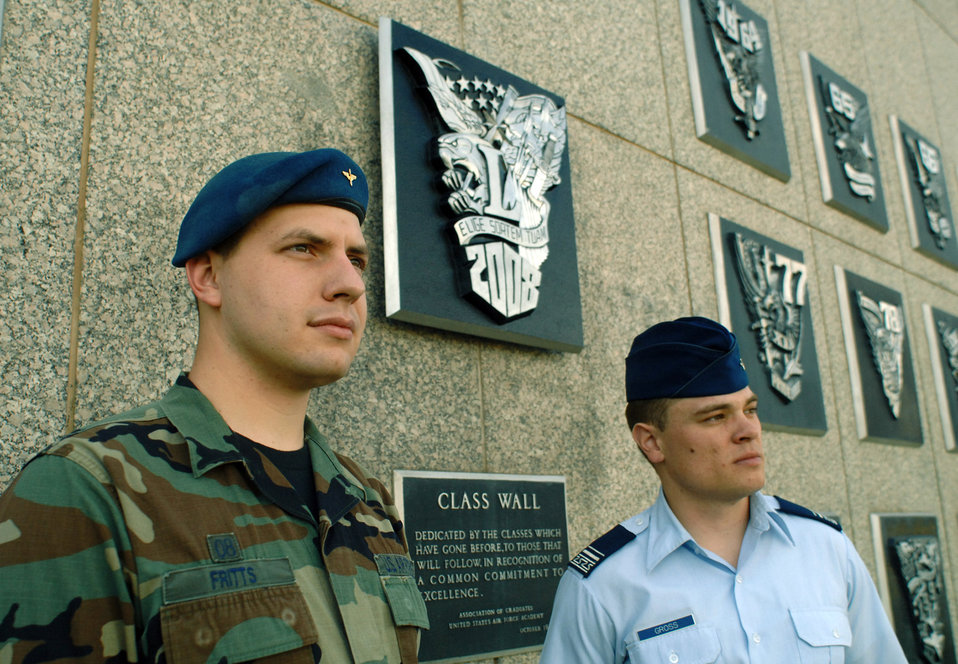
Cadet cyberwarriors head to AFIT

Cadets 1st Class Nick Fritts (left) and Aaron Gross reflect on their careers May 12 near the class wall in the Air Force Academy in Colorado. The cadets will be the first graduates to go directly from the Academy to the Air Force Institute of Technology's cyber warfare track. In addition to computer science, core courses directly supporting the Academy's cyberwarrior development draw from a variety of departments, including law, electrical engineering, philosophy, physics, chemistry, behavioral sciences, engineering and military strategic studies.